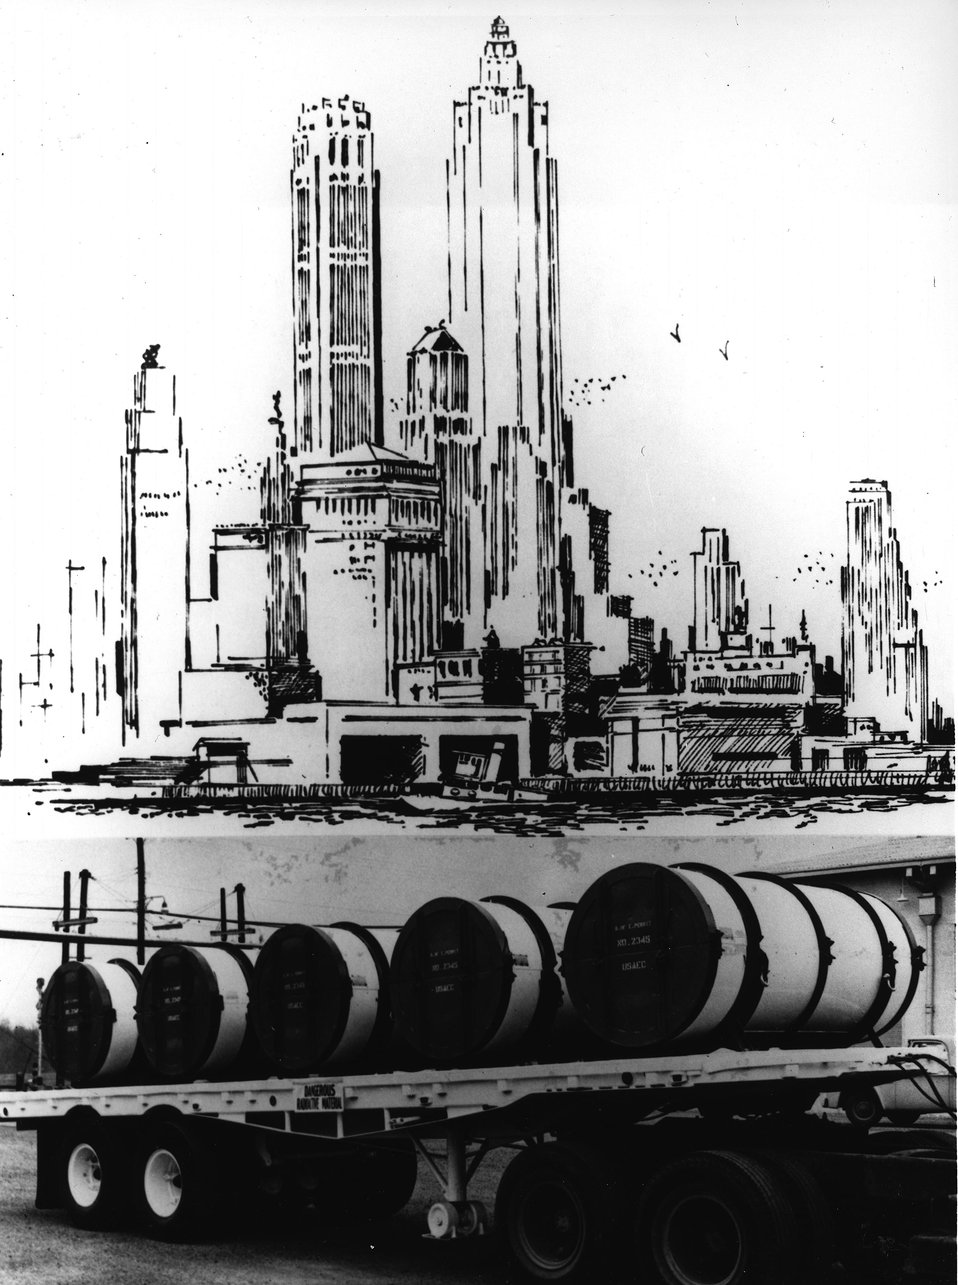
A single truckload of enriched U-235 (like this shipment from the Oak Ridge Gaseous Diffusion Plant) can supply the total electrical power needs for a city of 200,000 people for an entire year. c. 1968